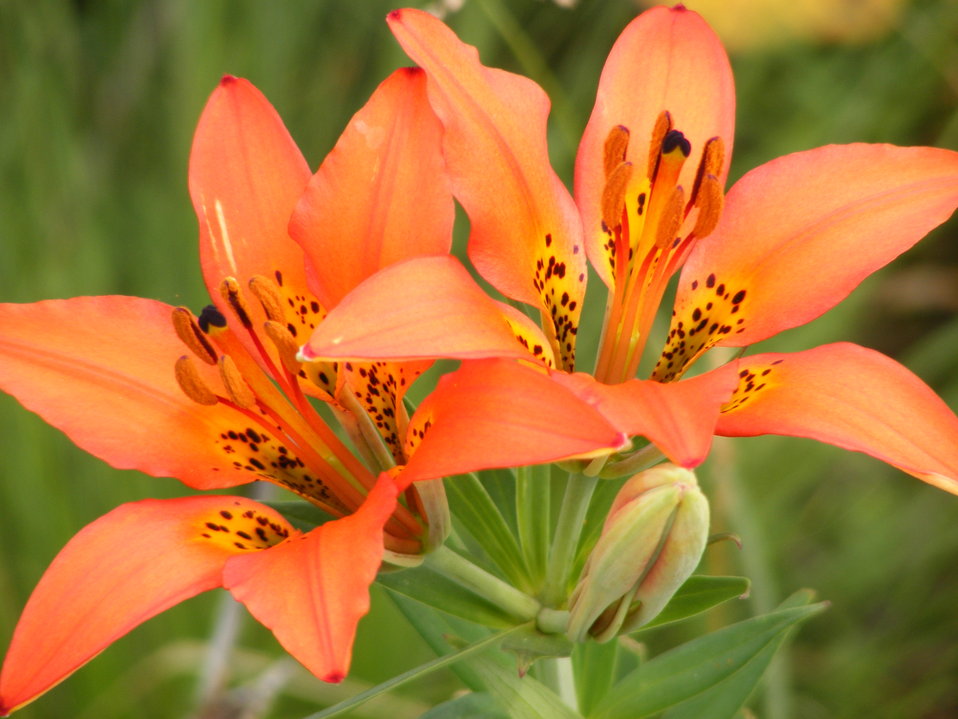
Wood Lily

Despite its common name, this flower is often found in tallgrass prairies. Its bright color and size make it noticeable, though it is never very abundant.